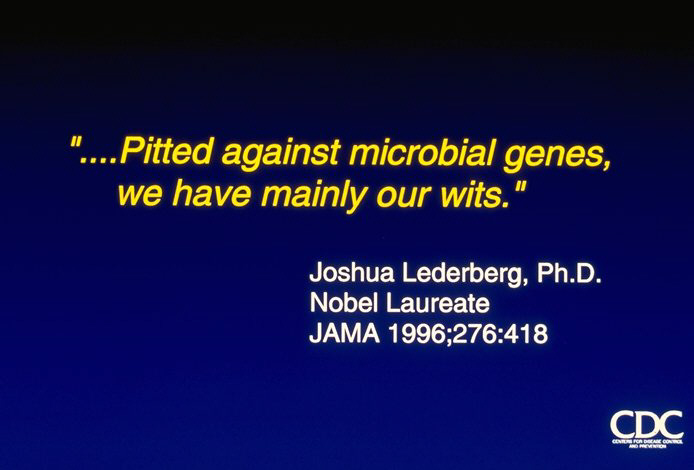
Summary of need to develop prevention strategies for emerging infectious diseases (quote, Dr. Joshua Lederberg)